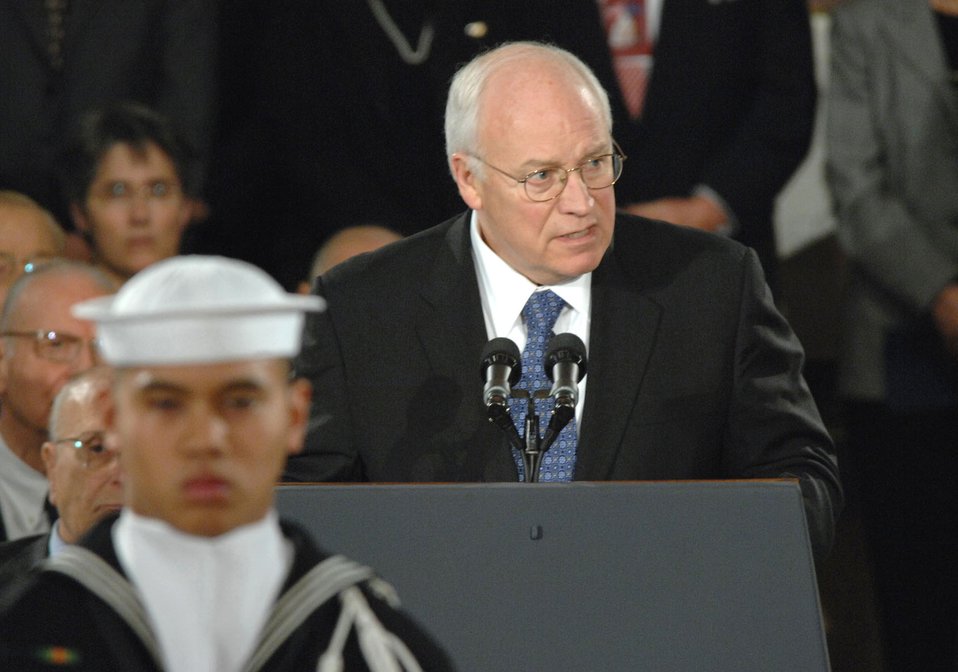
Cheney lauds Ford's service during ceremony

Vice President Richard B. Cheney pays tribute to former President Gerald R. Ford during services at the U.S. Capitol Rotunda on Dec. 30.